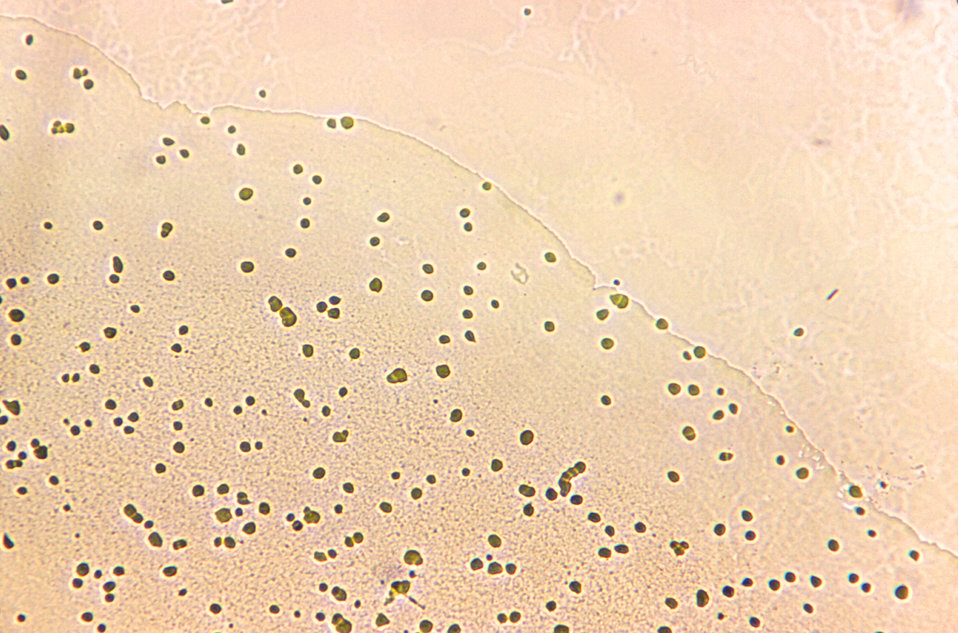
Under a low magnification of only 50X, this photomicrograph revealed numbers of free-living, Naegleria gruberi amoebae, which had been cultured in an agar-filled Petri dish. Free-living amoebae belonging to the genera Acanthamoeba, Balamuthia, and Naegleria, are important causes of disease in humans and animals.What is Naegleria?